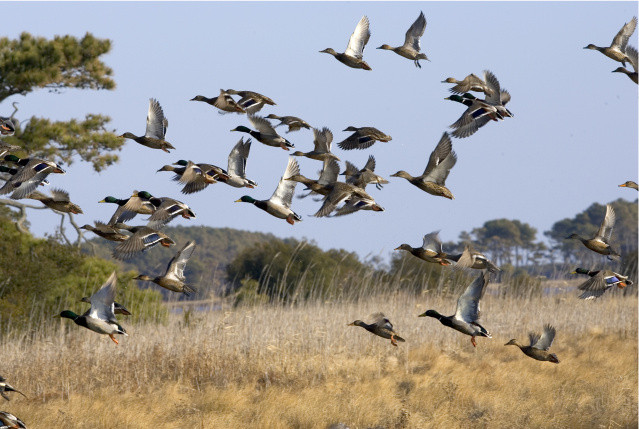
waterfowl

Chincoteague National Wildlife Refuge, VA